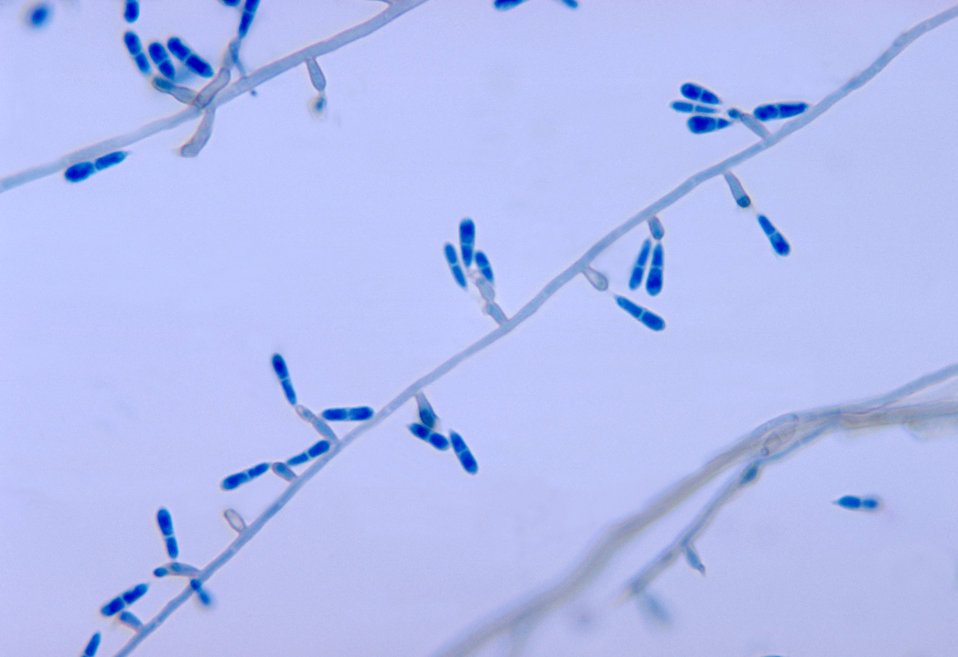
These are conidia on conidiophores of Ochroconis gallopavum, formerly Dactylaria gallopava, isolated from turkey poult brain tissue specimens.